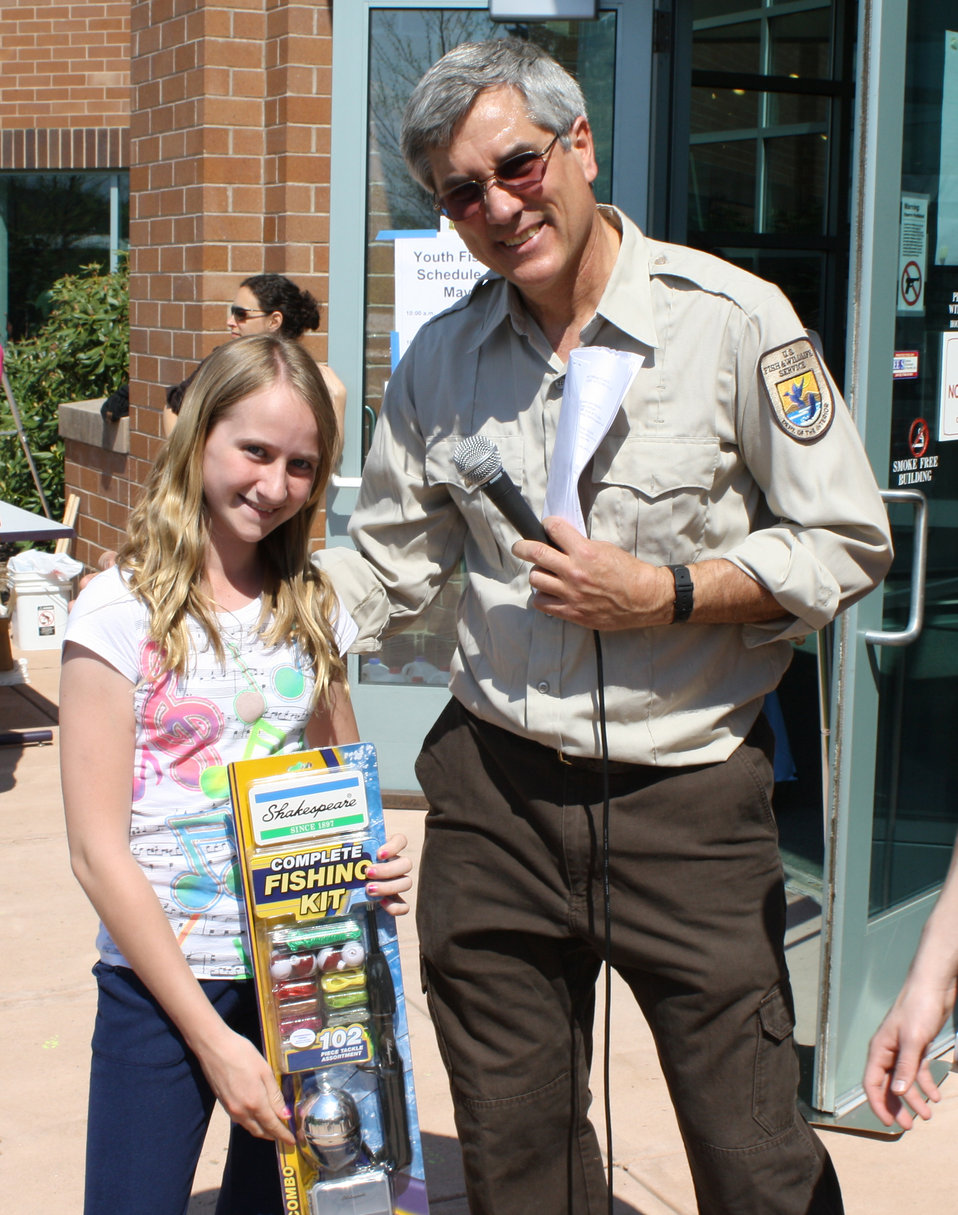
1st prize eldest!

A winner at the USFWS fishing derby in Hadley, MA on May 7th.